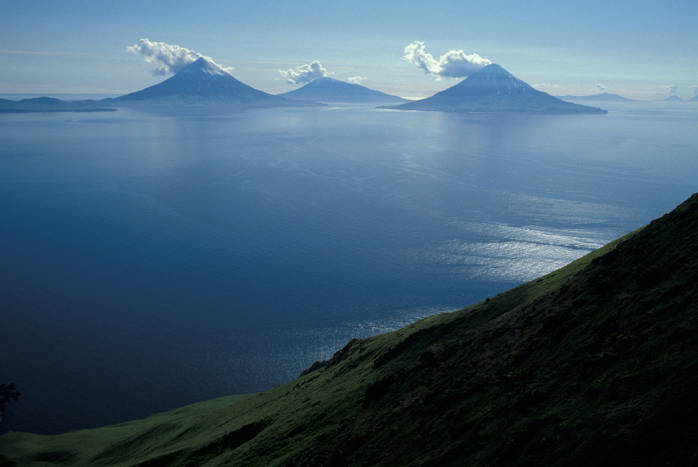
Island of the Four Mountains

Alaska Maritime National Wildlife Refuge